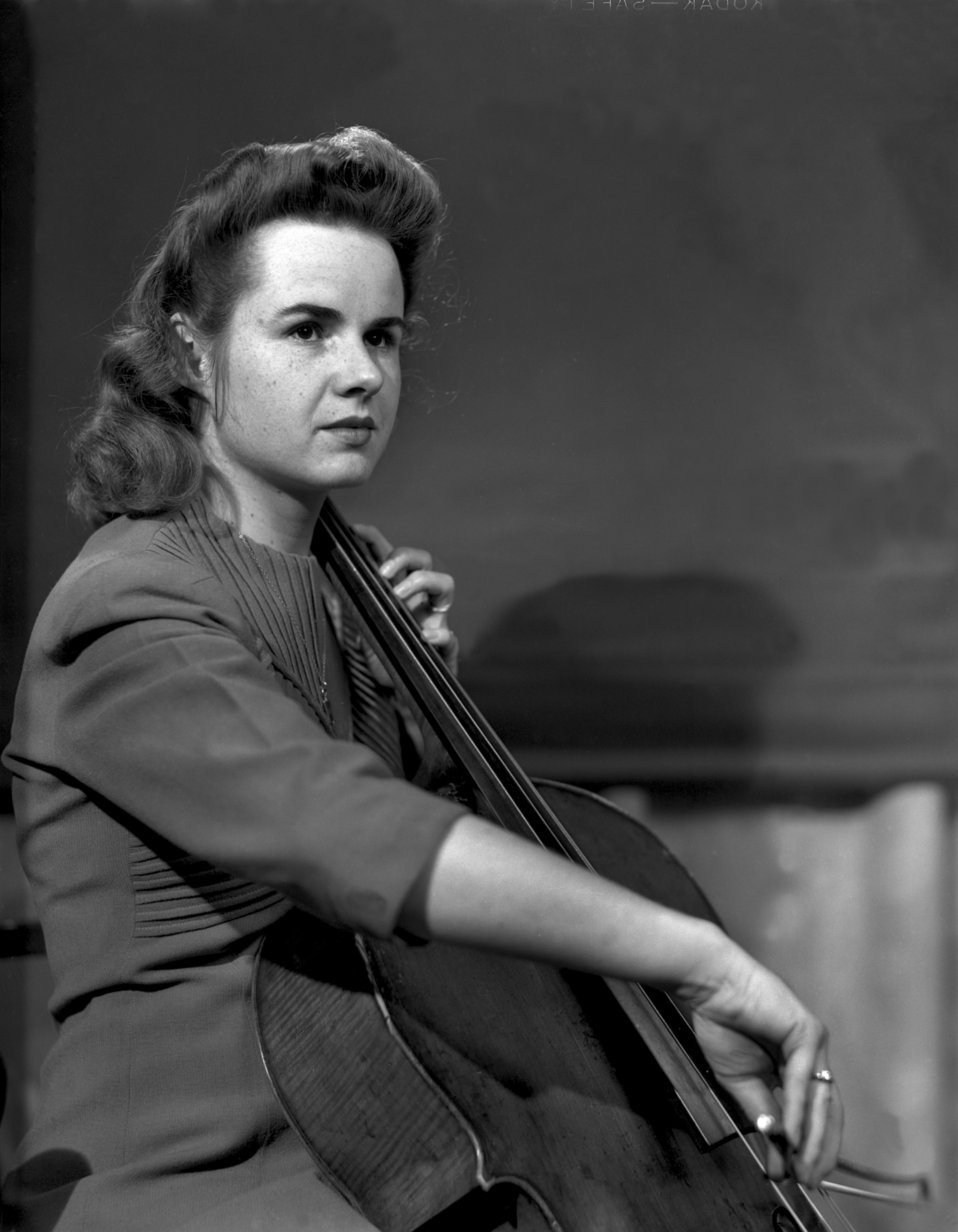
Mary Elizabeth Burris Oak Ridge Symphony

3240-2 DOE photo Ed Westcott 1-15-1947 Oak Ridge Tennessee